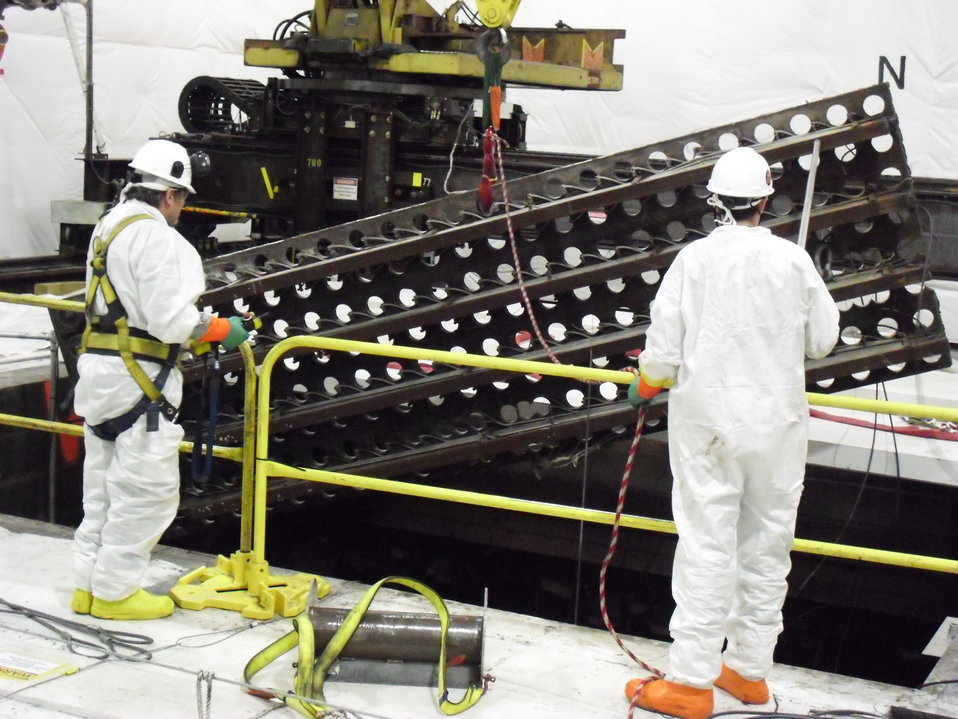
Recovery Act Workers Clear Reactor Shields from Brookhaven Lab

Recovery Act workers at Brookhaven National Laboratory load neutron shield pieces into a shielded container for shipment to a disposal facility.